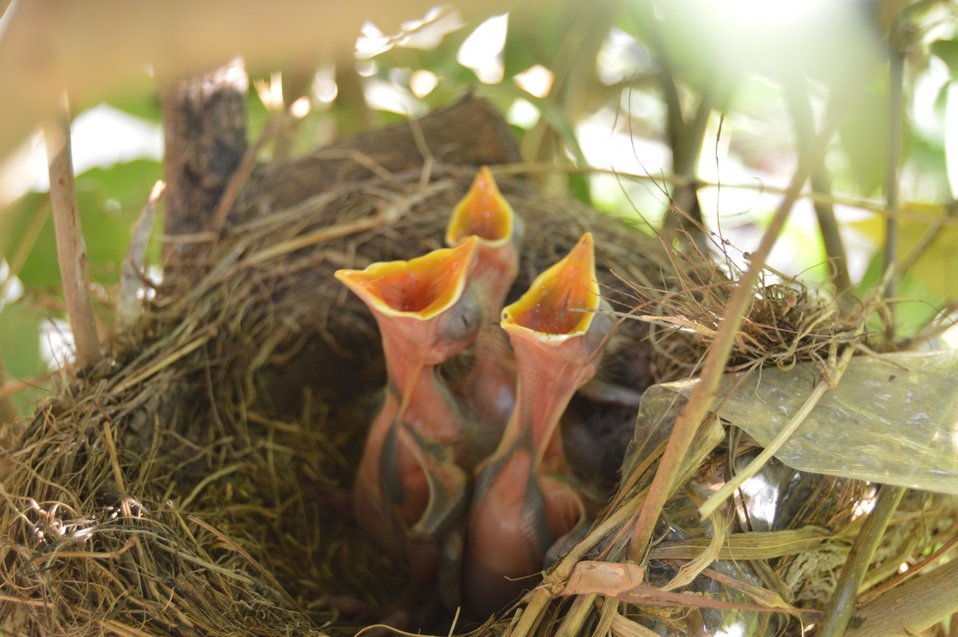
Birds in a nest

2 new baby birds in a nest.